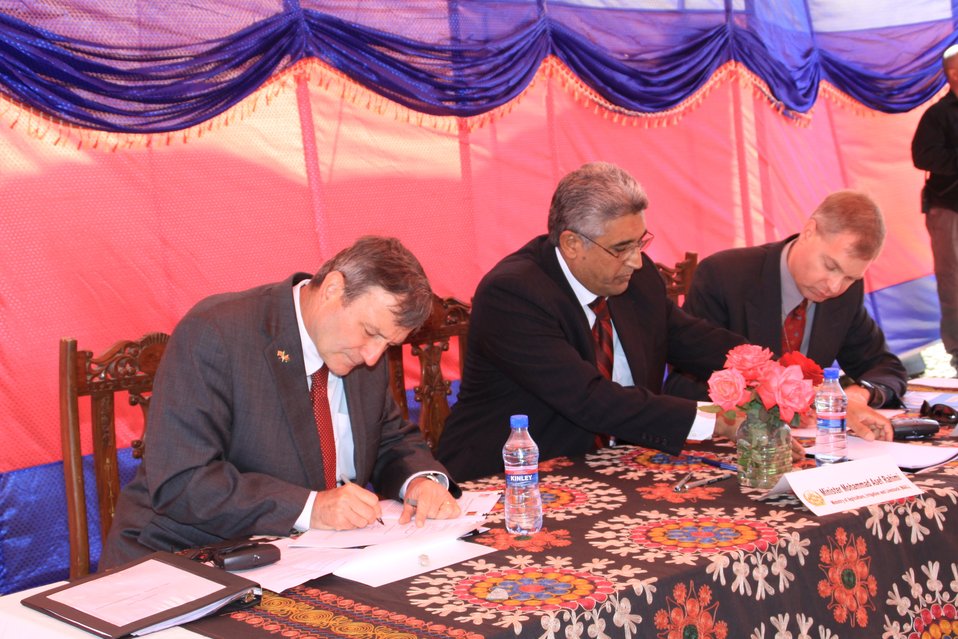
AVIPA Plus Wheat Seed Distribution 101005

US Ambassador Karl Eikenberry and USAID Acting Mission Director Kevin Brownawell joined the Minister of Agriculture, Irrigation and Livestock, H.E. Minister Mohammed Rahimi in signing a Memorandum of Understanding and distributing vouchers to area farmers for wheat and fertilizer.